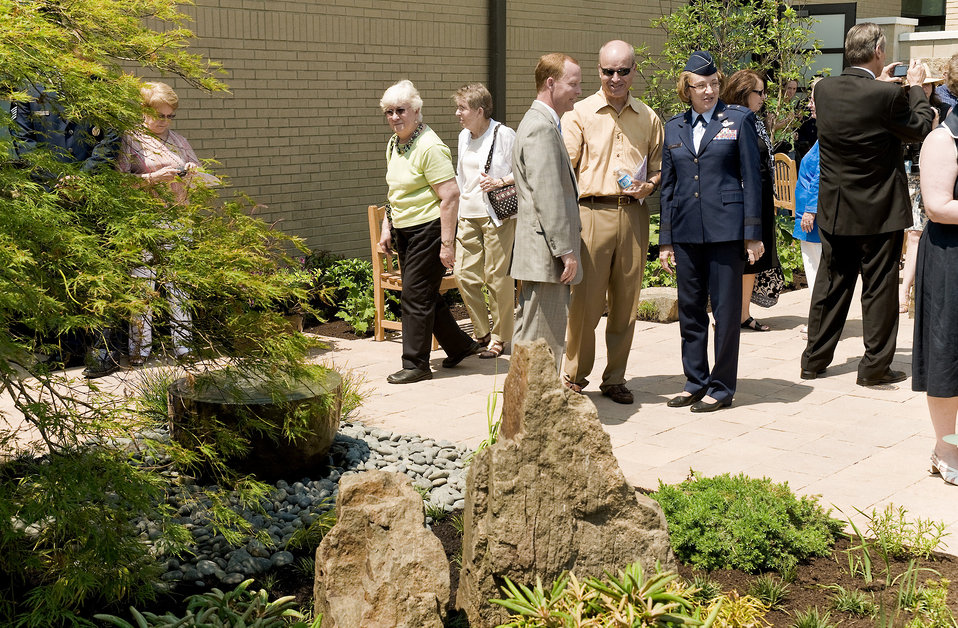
Memorial garden dedicated for families of the fallen

A group tours the new memorial garden May 31, 2011, at the Center for Families of the Fallen at Dover Air Force Base, Del.